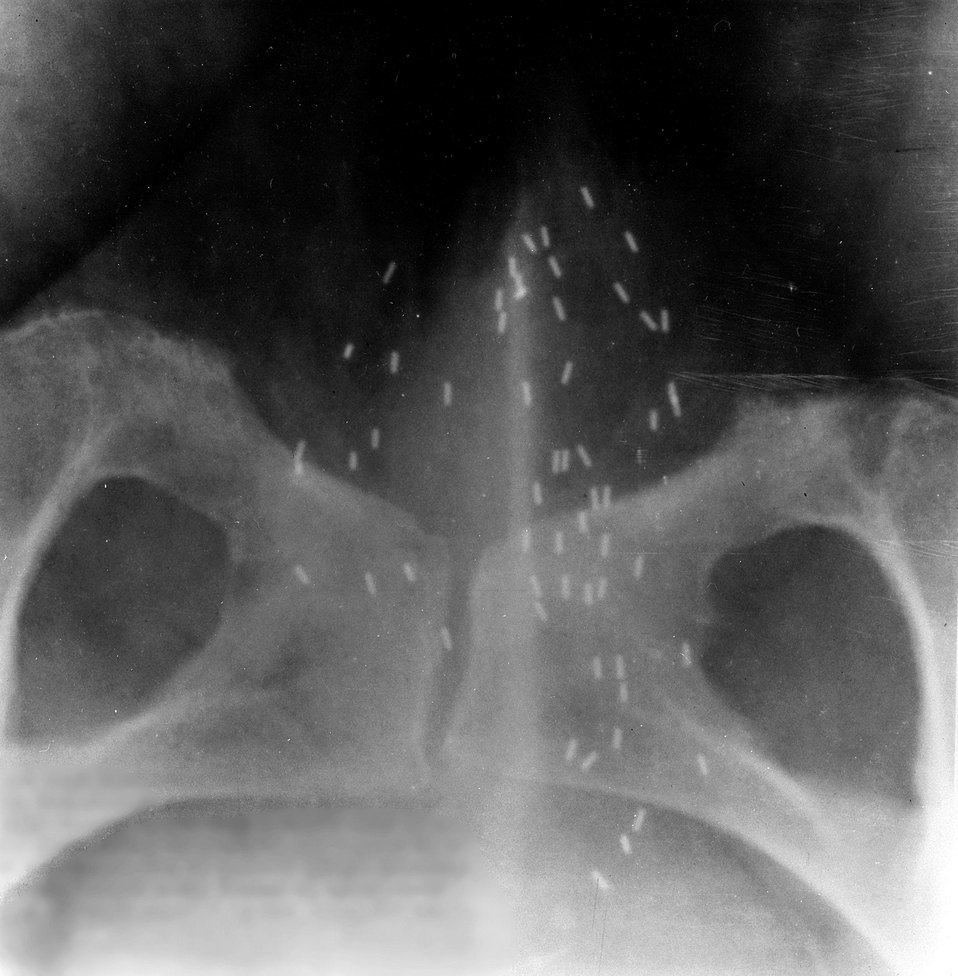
Photo shows and x-ray of the pelvis of a patient with cancer of the anus showing implanted 'seeds' of radioactive chromium wire which can be left in the body permanently.
c.1968